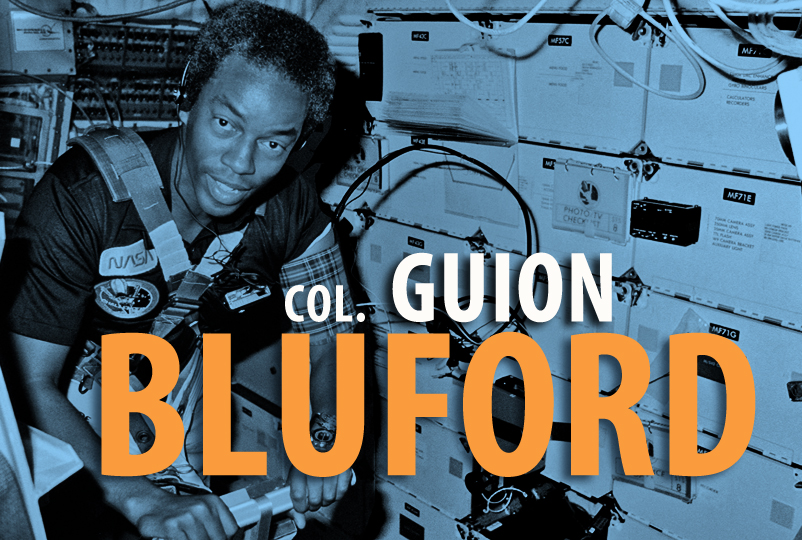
Col. Guion Bluford